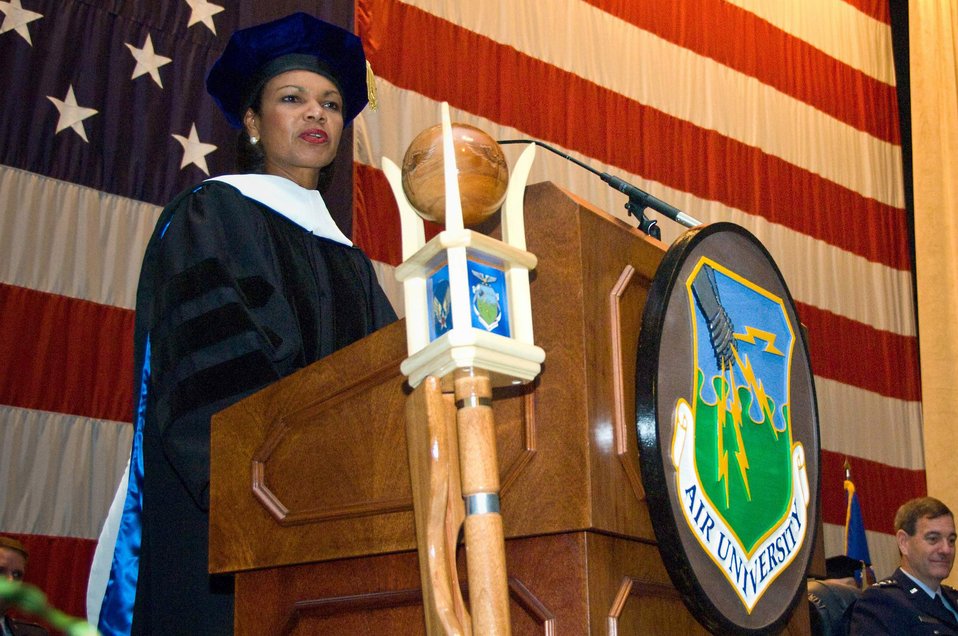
Secretary of state receives honorary Air University degree

Secretary of State Condoleezza Rice speaks to Air University's board of visitors, commanders, faculty and students after receiving an honorary Doctor of Letters degree from university officials April 14 at Maxwell Air Force Base, Ala. Air University bestowed the honor for her academic achievements and contributions to international relations and national security.